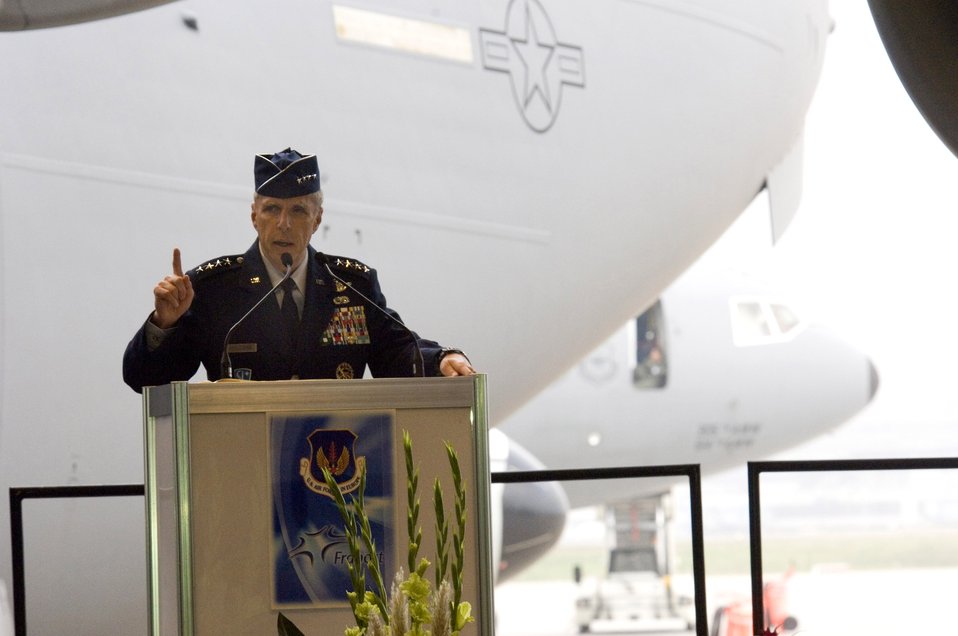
Airlift honored

RHEIN-MAIN AIR BASE, Germany -- Gen. Robert H.